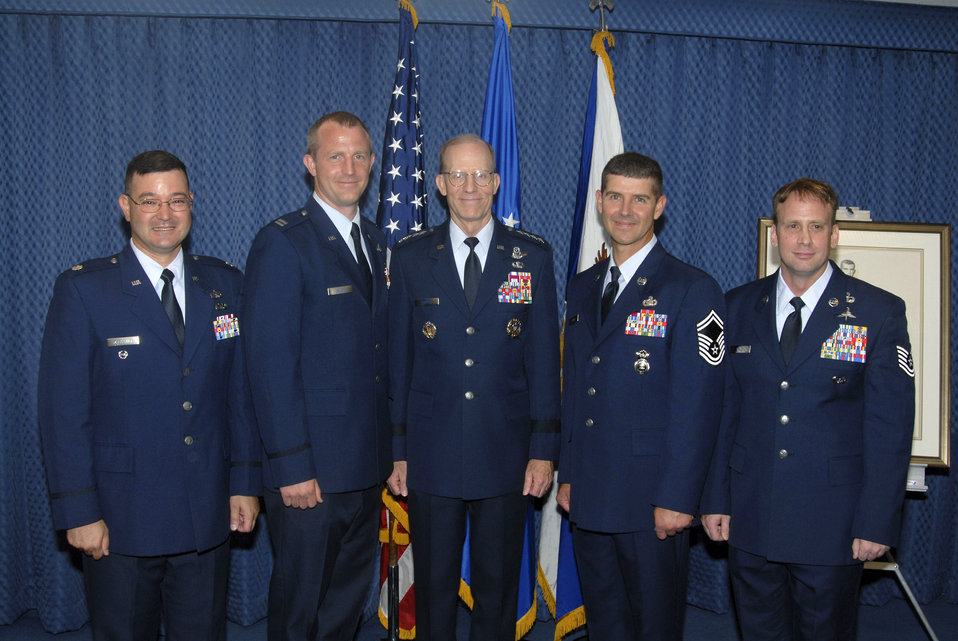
Airmen receive Sijan Air Force leadership award

Gen. John D.W. Corley (center), vice chief of staff of the Air Force, stands with 2006 Lance P. Sijan recipients (left to right) Lt. Col. Eric Axelbank, Capt. Matthew Allen, Senior Master Sgt. David John and Tech. Sgt. Shannon Cruz. The Lance Sijan P. Award is given annually and recognizes Airmen who demonstrate outstanding leadership abilities while assigned to their organizations.